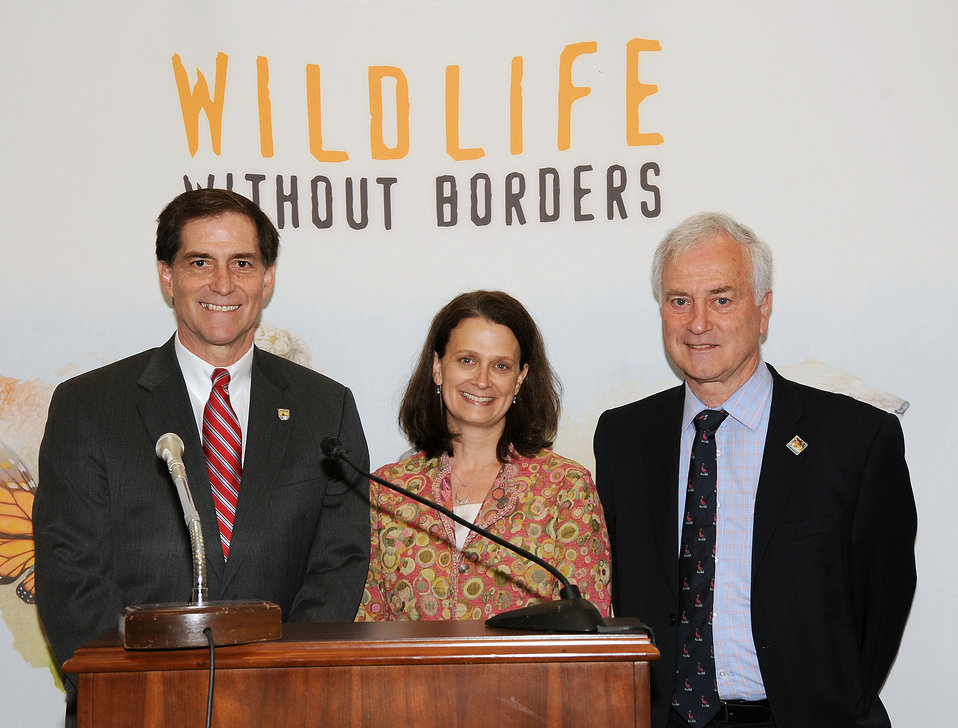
Save Vanishing Species on Capitol Hill

Dan Ashe, Katie Frohardt, Herb Raffaele